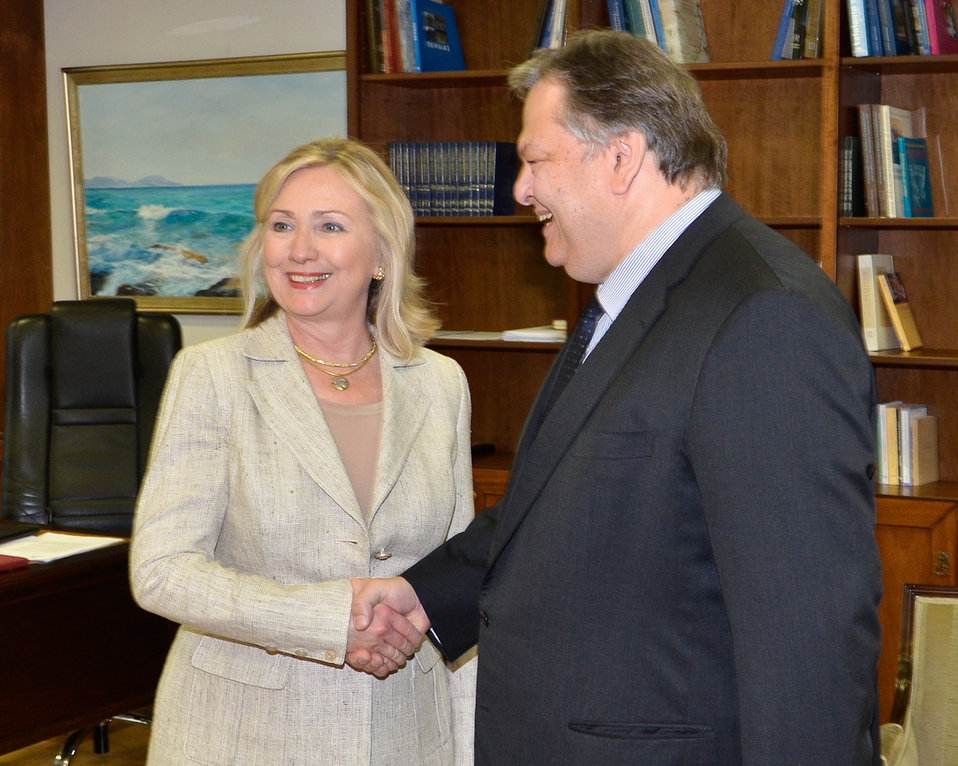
Secretary Clinton Shakes Hands With Greek Foreign Minister Venizelos

U.S. Secretary of State Hillary Rodham Clinton shakes hands with Greek Finance Minister Evangelos Venizelos in Athens, Greece, on July 17, 2011.